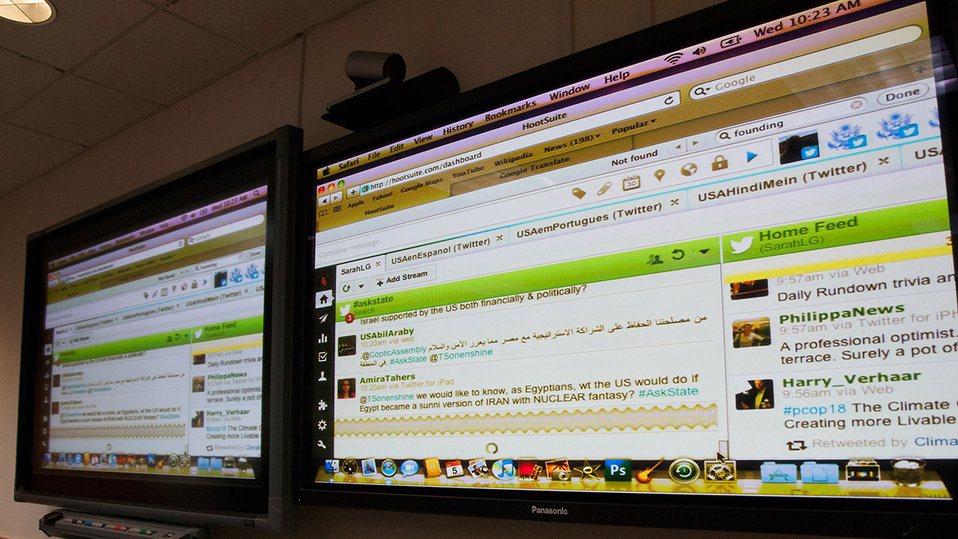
Under Secretary Sonenshine Participates in a Global Twitter QandA

Under Secretary of State for Public Diplomacy and Public Affairs Tara Sonenshine, @TSonenshine, participates in a Global Twitter Q and A on December 5, 2012.